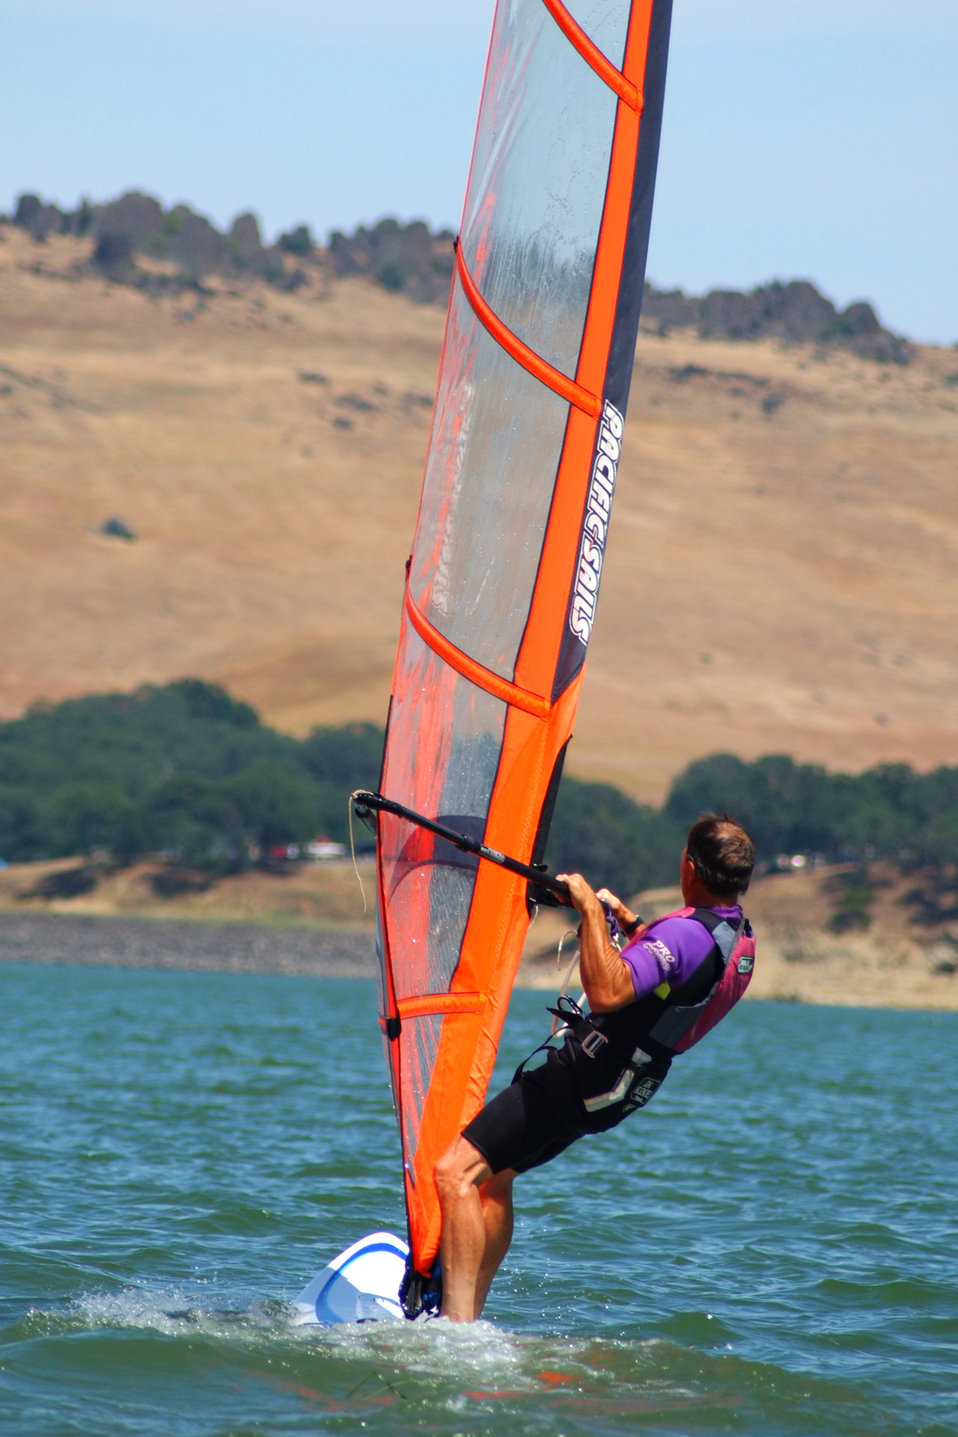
Black Butte Lake

Sail boarding is a popular water sport at Black Butte Lake near Orland, Calif., shown May 26, 2002. The lake was formed from the impoundment of Stony Creek in 1963, when the U.S. Army Corps of Engineers Sacramento District completed construction of Black Butte Dam. When full, the lake has a surface area of 4,460 acres, is seven miles long and boasts a shoreline of 40 miles. The dam reduces flood risk for nearby towns and agricultural lands. Black Butte Lake and Dam are managed by the Sacramento District.